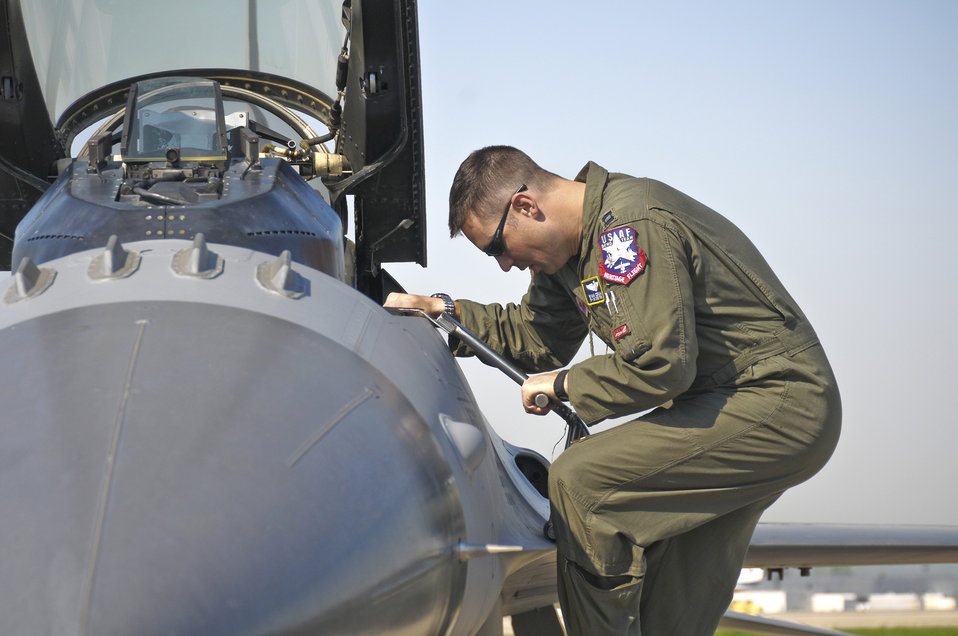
Strike Eagle, Fighting Falcon 'thunder' over Kentucky

Capt. Ryan Corrigan, a pilot with the 20th Fighter Wing at Shaw Air Force Base, S.C., exits his F-16 Fighting Falcon at the Kentucky Air National Guard Base in Louisville, Ky., April 15, 2010. Captain Corrigan is part of the U.S. Air Force Viper East Demo Team that will be performing in the Thunder Over Louisville air show.